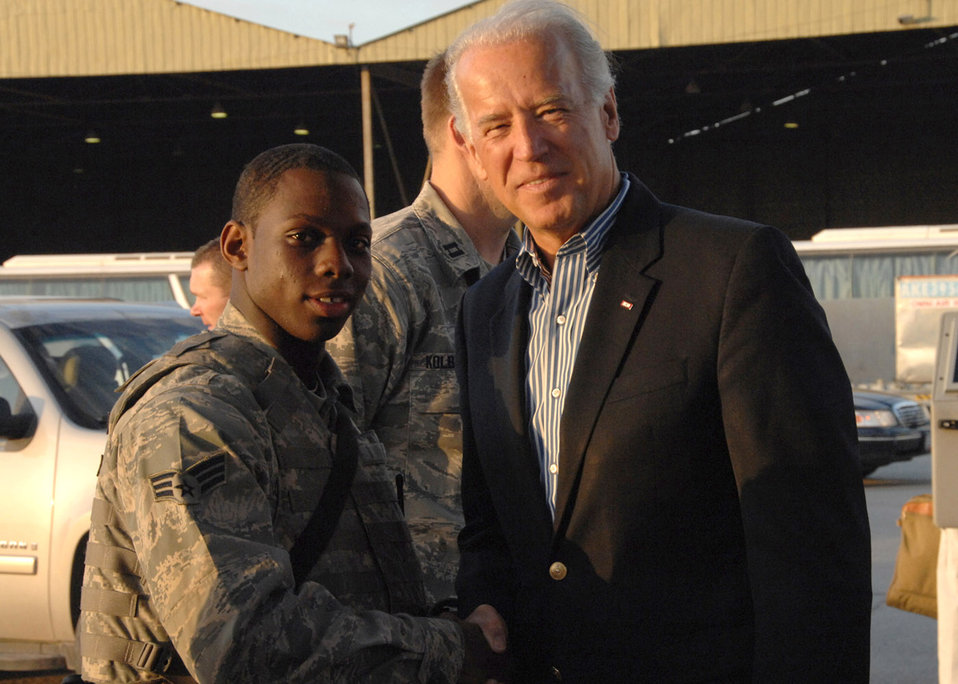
Vice president-elect meets Airmen in Southwest Asia

Senior Airman Walton Cornelius poses for a photo with President-elect Joe Biden Jan. 12 at an air base in Southwest Asia. Airman Cornelius is assigned to the 387th Expeditionary Security Forces Squadron.